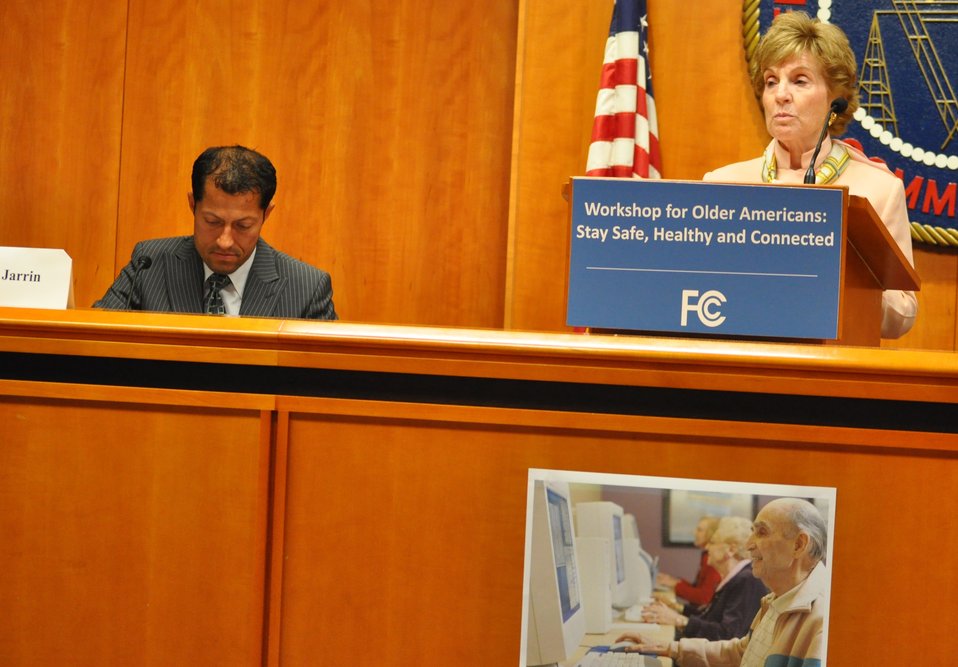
5.22.2014 Workshop for Older Americans: Stay Safe, Healthy and Connected

Susan Haight, President, Foggy Bottom West End Village